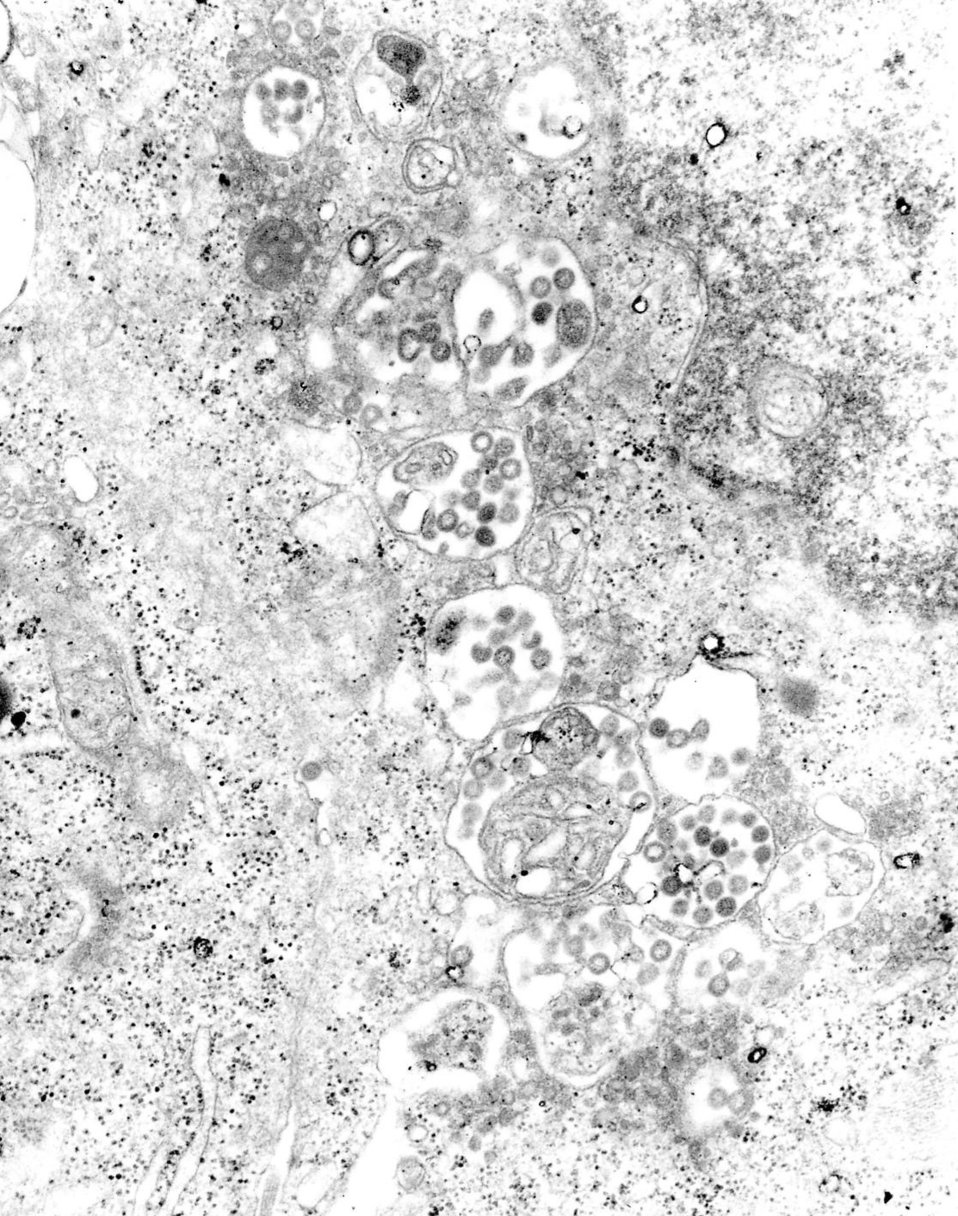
This transmission electron micrograph (TEM) depicted a highly magnified view of a tissue that had been infected with Rift Valley fever (RVF) virus. RVF virus is a member of the genus Phlebovirus in the family Bunyaviridae and was first reported in livestock in Kenya around 1900. It is found to be an acute, fever-causing viral disease that affects domestic animals (such as cattle, buffalo, sheep, goats, and camels) and humans. RVF is most commonly associated with mosquito-borne epidemics during years of unusually heavy rainfall.